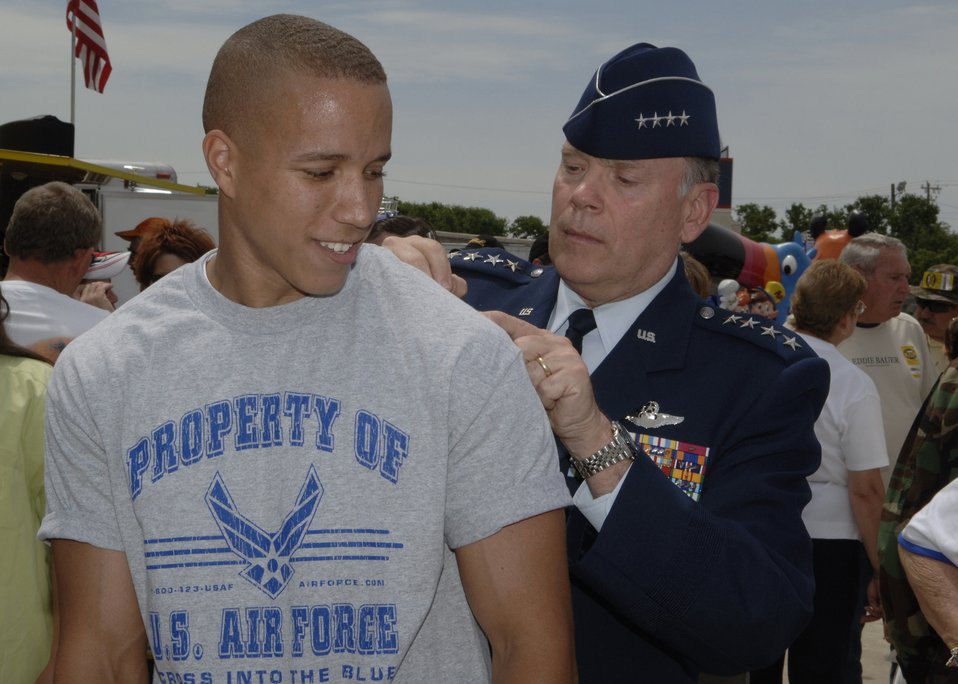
Race into the blue

CONCORD, N.C. -- Air Force Chief of Staff Gen. John P. Jumper signs Reuben Mclendon's shirt. Mr. Mclendon was sworn into the Air Force at the speedway here May 29 before the NASCAR Coca-Cola 600 race.